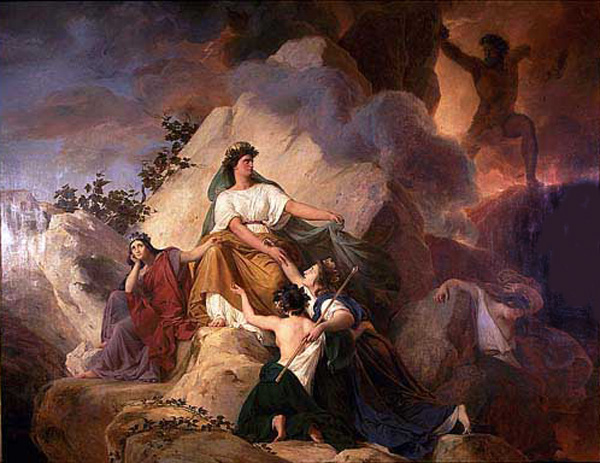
1832 François-Édouard Picot - Cybele protects from Vesuvius